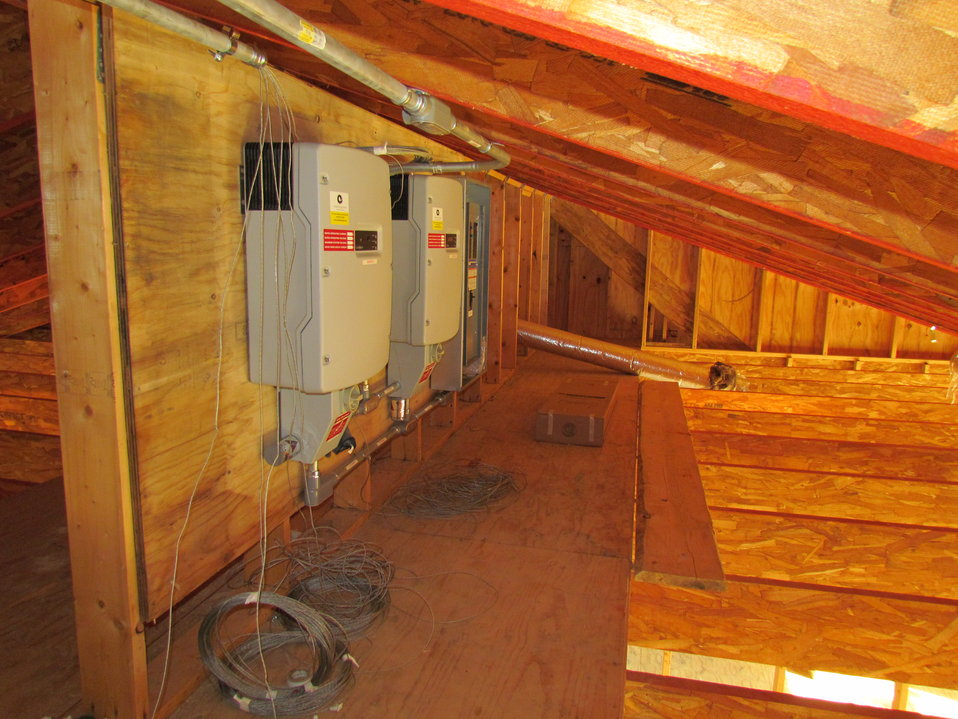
Net-Zero Energy Residential Test Facility - Photo showing the inverters and switchgear associated with the facility. The inverters convert the direct current electricity generated by the panels into 60 cycle alternating current electricity that is commonly used in residential structures.